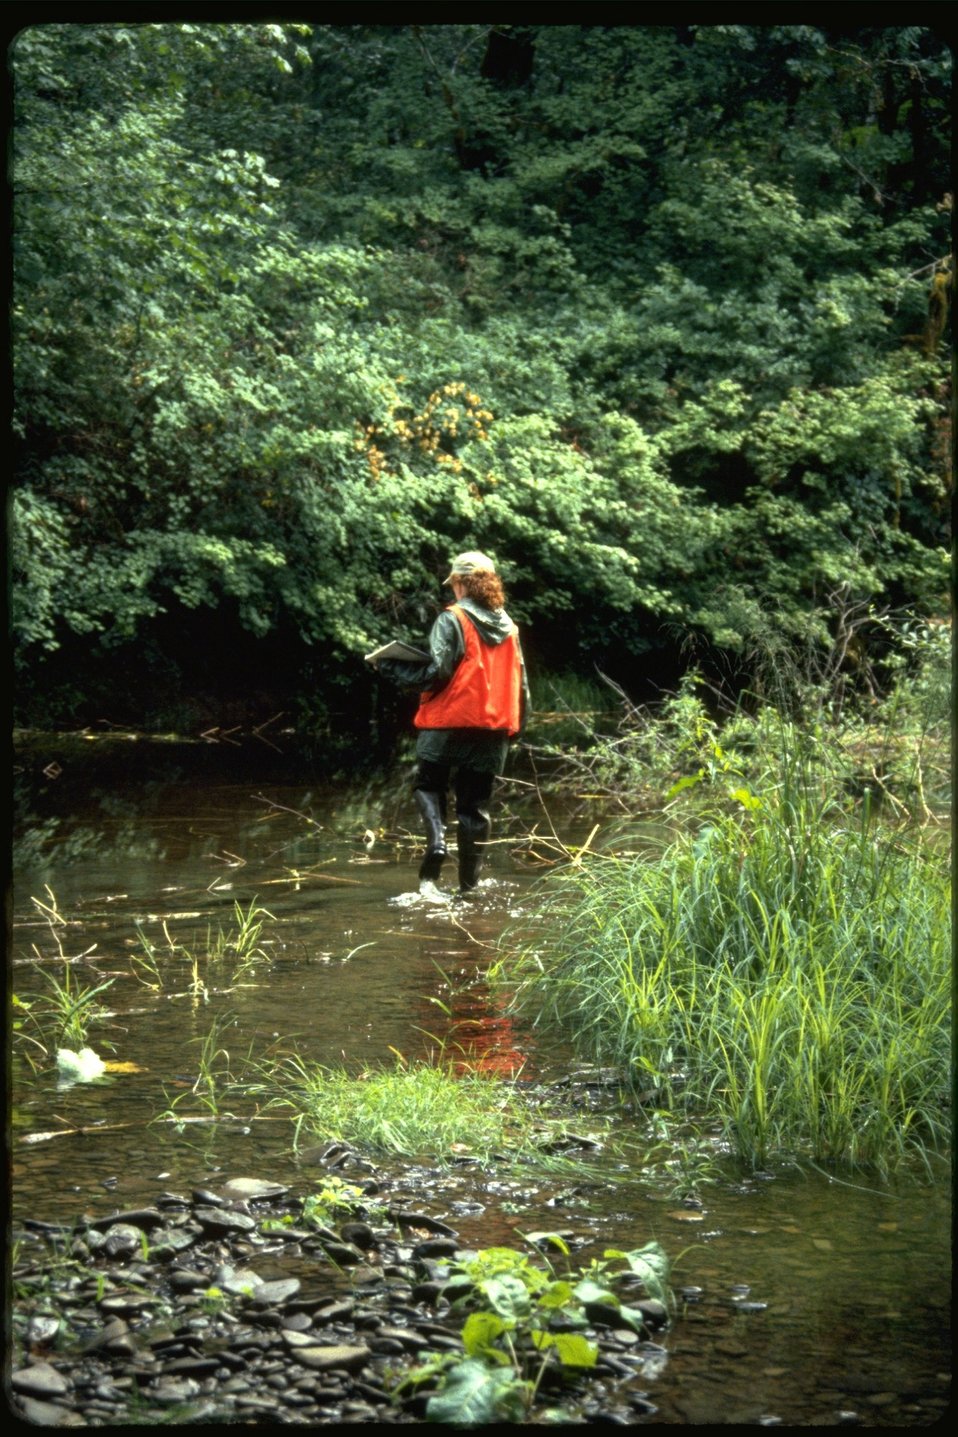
Sarah surveying Smith Creek during habitat study.